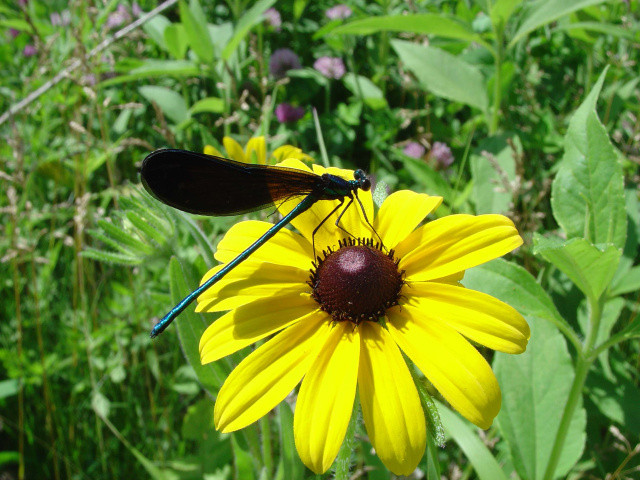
ebony jewelwing damselfly on black-eyed susan

Neal Smith National Wildlife Refuge